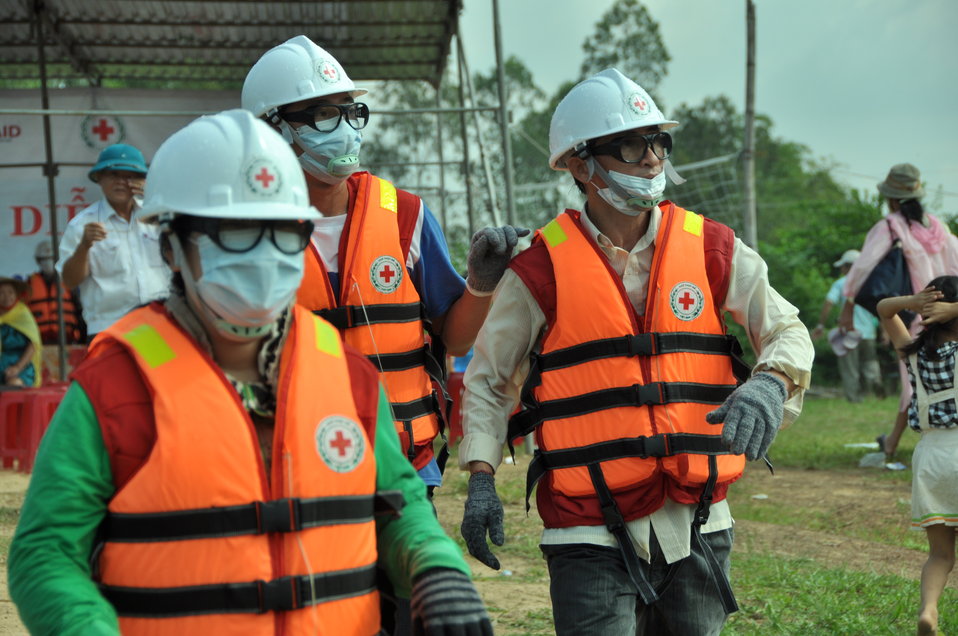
USAID, Red Cross Support Disaster Response Drill in Duy Hoa Commune, Quang Nam Province

Duy Hoa Commune, Quang Nam Province
December 5, 2012